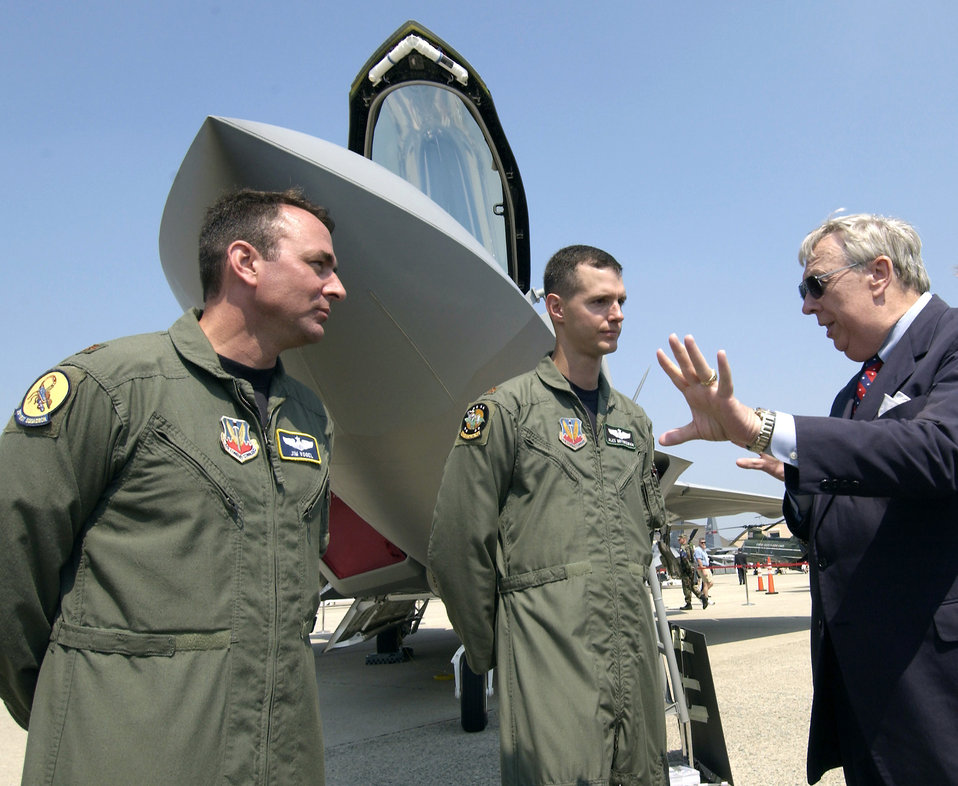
Raptor talk

ANDREWS AIR FORCE BASE, Md. -- Secretary of the Air Force Dr. James G. Roche (right) visits with an F/A-22 Raptor crew following opening ceremonies at the three-day Joint Service Open House here May 14. The secretary then met with reporters to talk about the Raptor's successful initial operational test evaluation trials.